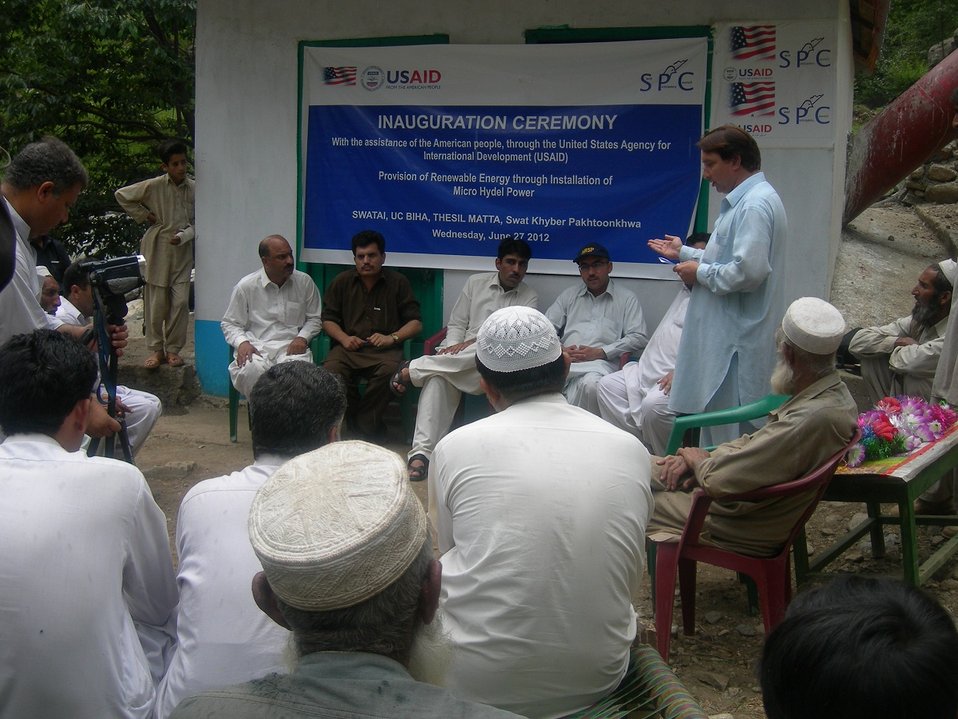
INAUGURATION CEREMONY

A new wave of energy has swept a remote village of Matta Tehsil. Children are excited, elders relieved. Electricity had lit their dark houses after over six decades of independence and connected them to the modern world.
“We can now watch cartoons on the TV just like all the other children,” said an excited child during the inauguration of a micro-hydropower station on Saturday.
The community-based power station, which will supply electricity to about 110 households in Swatai village, has been installed with the assistance of Small Grants Ambassador Fund Program of the USAID in collaboration with the Swat Participatory Council (SPC).